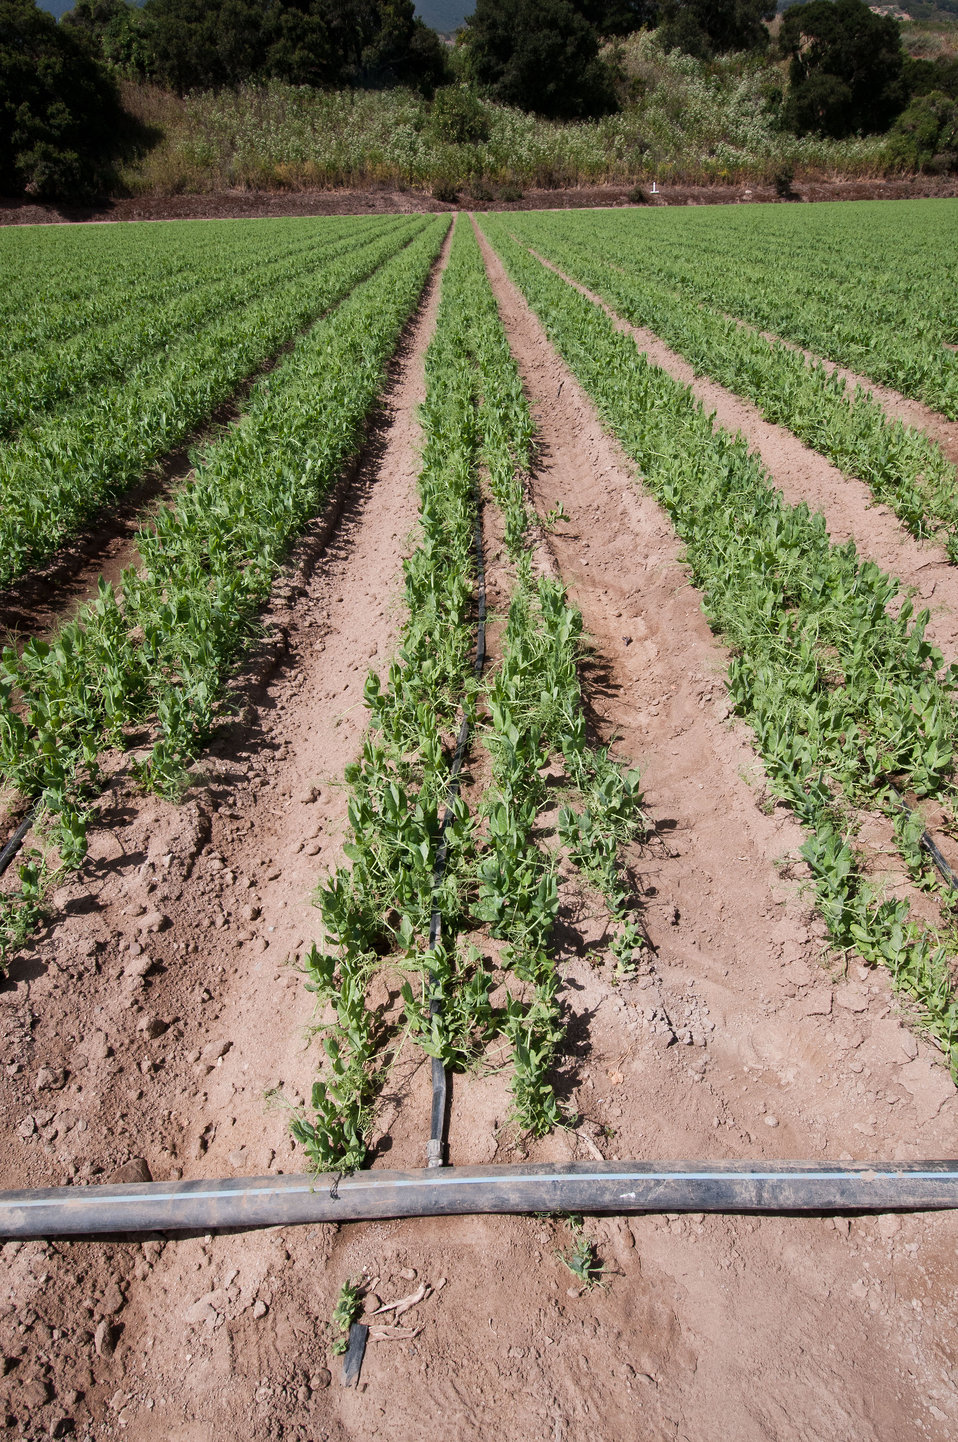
Micro irrigation begins with an economical reuse of irrigation water hydrants at Leafy Greens Farm in the Salinas Valley of California on Thursday, June 16, 2011. A series of reduction couplings lead to the collapsible header tube that supply water to dozens of separate tubes. That take water to every plant in the row. Water evaporation is kept to a minimum because water is delivered to the soil, not sprayed into the air or to exposed areas.